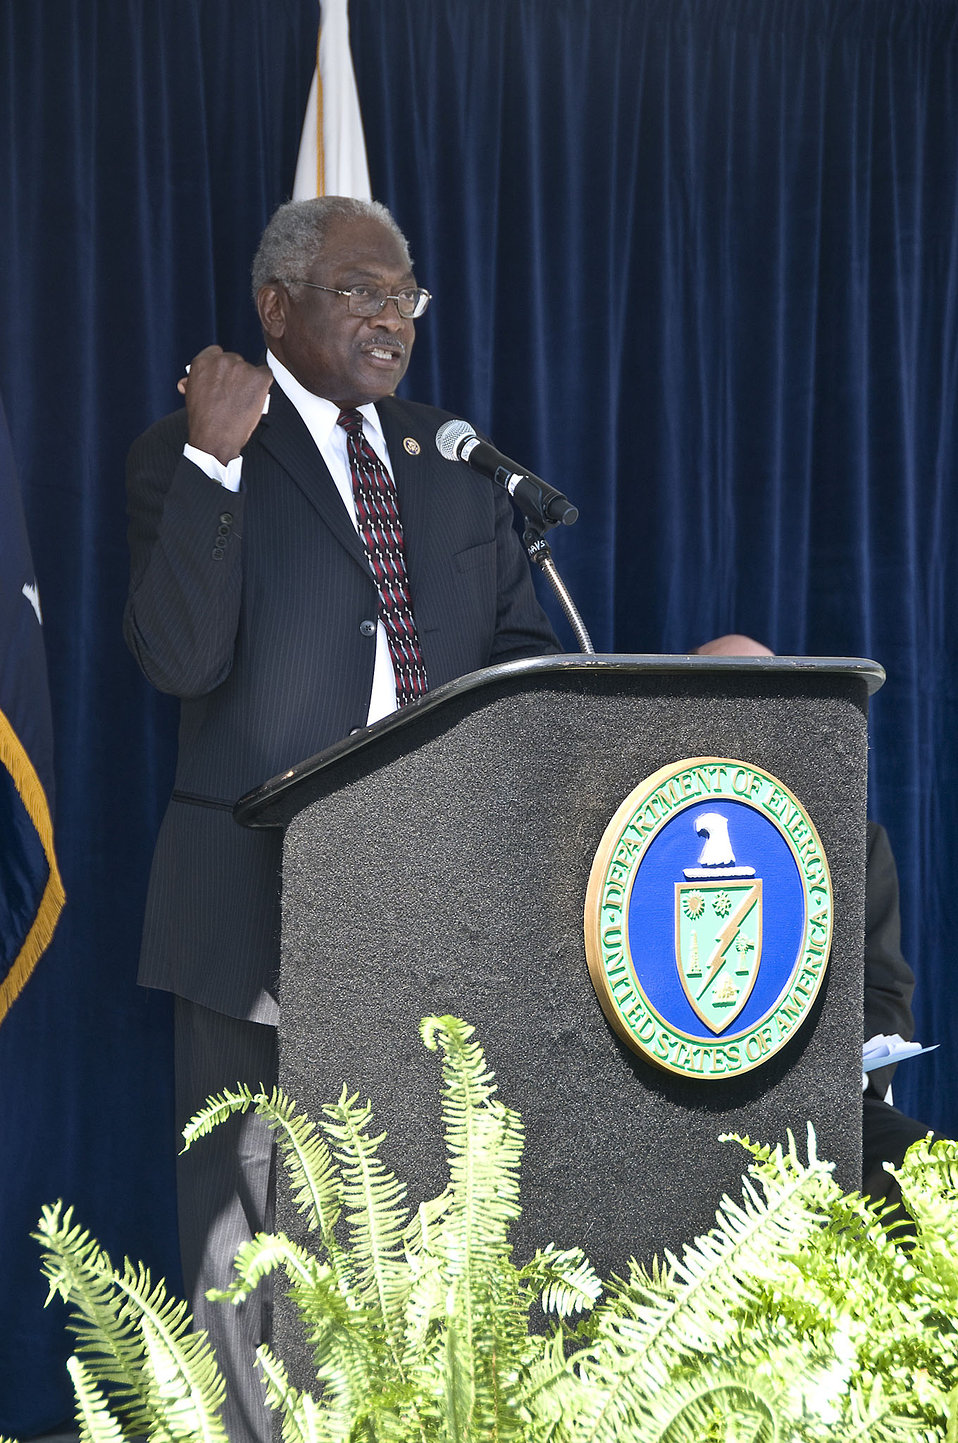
Recovery Act Boosts Savannah River Site’s Thriving Stakeholder Relationships

U.S. Rep. Jim Clyburn of South Carolina speaks at Savannah River Site.